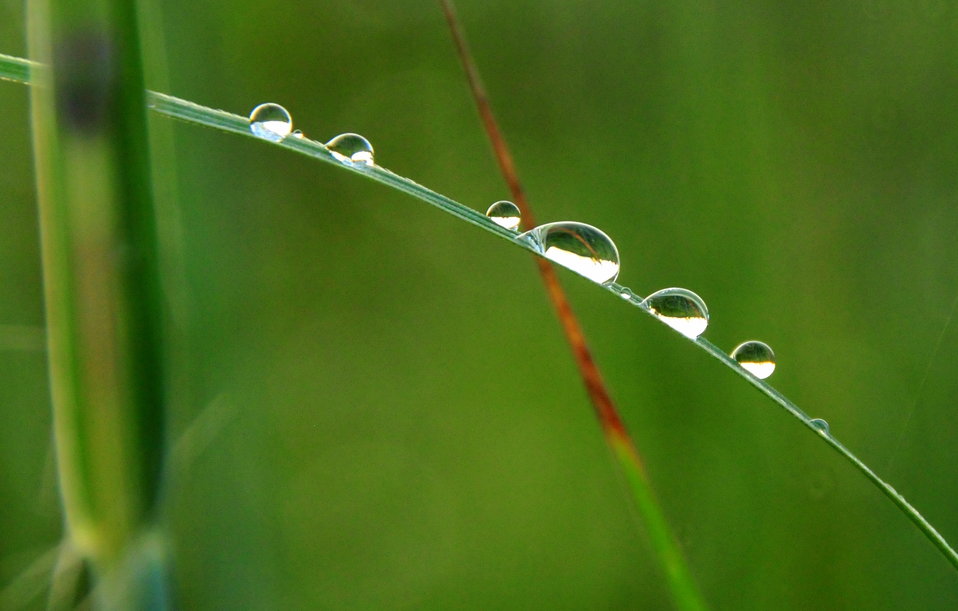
Drops of Dew on Prairie Cordgrass

Early morning dew forms on prairie cordgrass leaf in the Prairie Pothole Region of South Dakota.